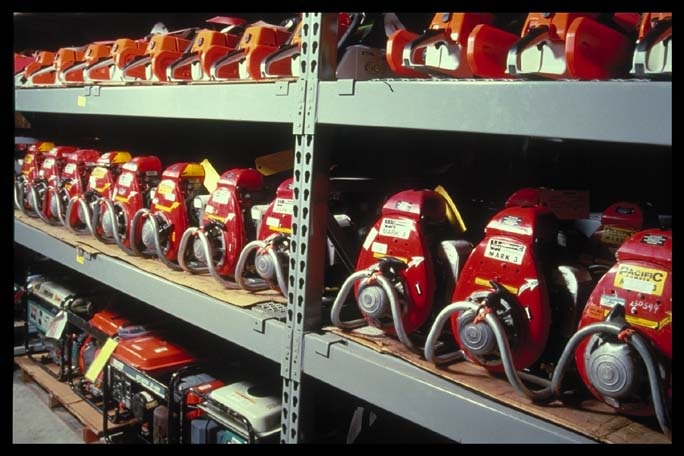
Warehouse